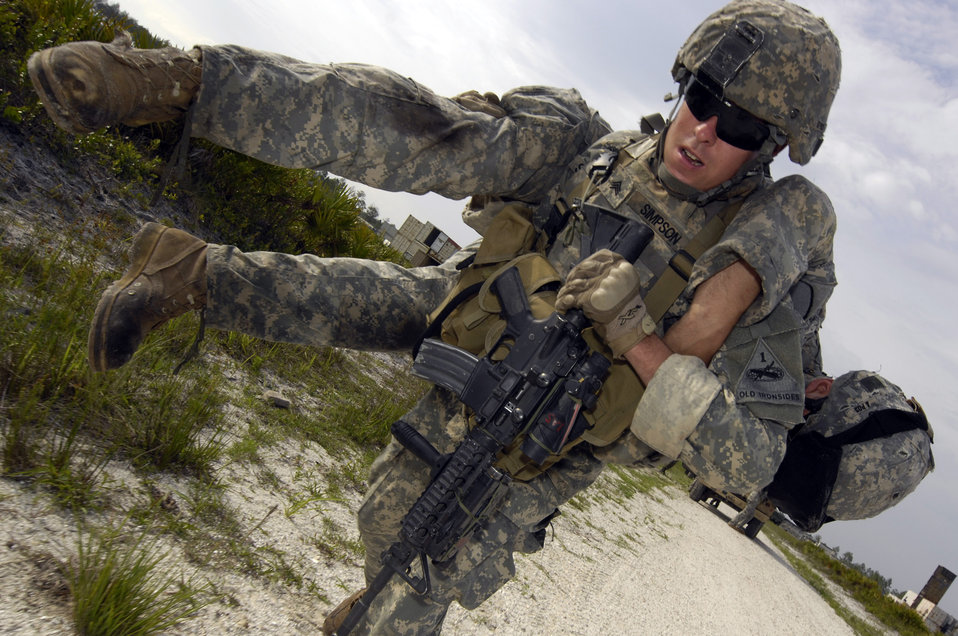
Atlantic Strike VII

An Army Soldier from the 4th Brigade Combat Team, 1st Armored Division, carries a wounded Soldier to safety during Atlantic Strike VII June 16 at Avon Park Air Ground Training Complex at Avon Park, Fla. Atlantic Strike is a joint-forces training event involving joint terminal attack controllers from the Army, Air Force and Marines held semi-annually.